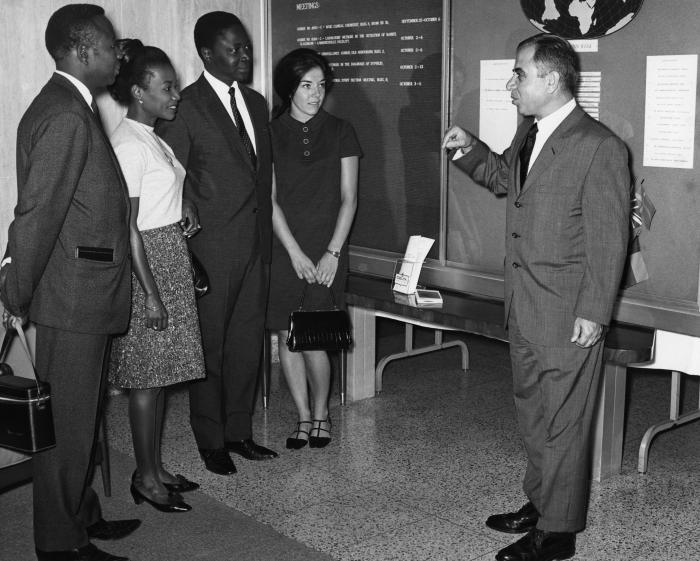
Shown here while attending a Centers for Disease Control 'Conference on Smallpox Eradication and Measles Control', were (left to right) Dr. Maximillian Yekpe, Chief of Smallpox Eradication Service and Consultant in Dahomey (now Benin), West Africa, Mrs. Daouda Badarou, wife of the Dahomey Health Minister, Dr. Daouda Badarou Minister of Health in Dahomey, Dianne Logan, interpreter, and Dr. Abdullah Najjar, Chief of the Office of International Affairs, National Communicable Disease Center (NCDC).